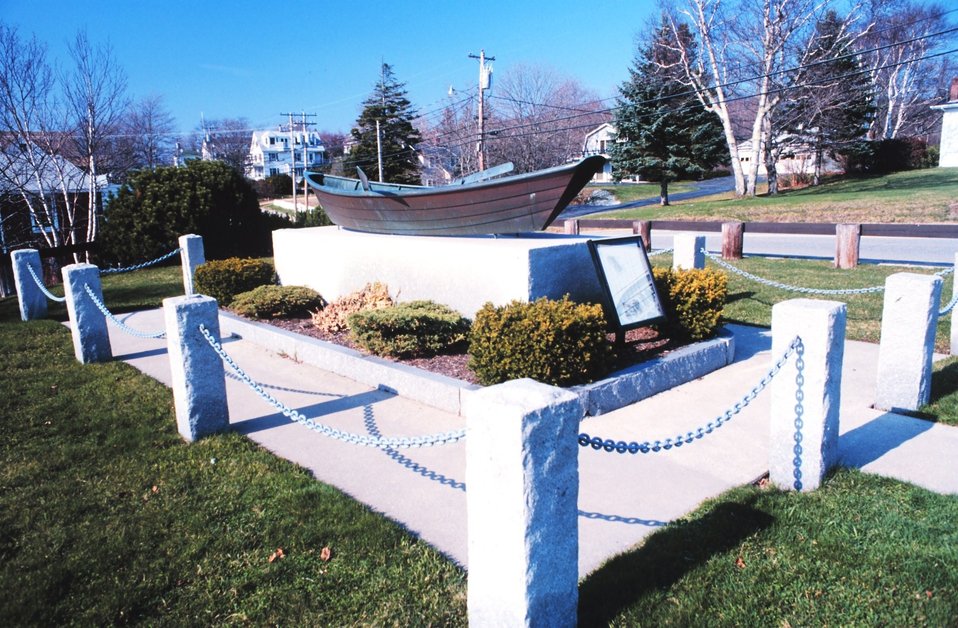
A Memorial to Fishermen.